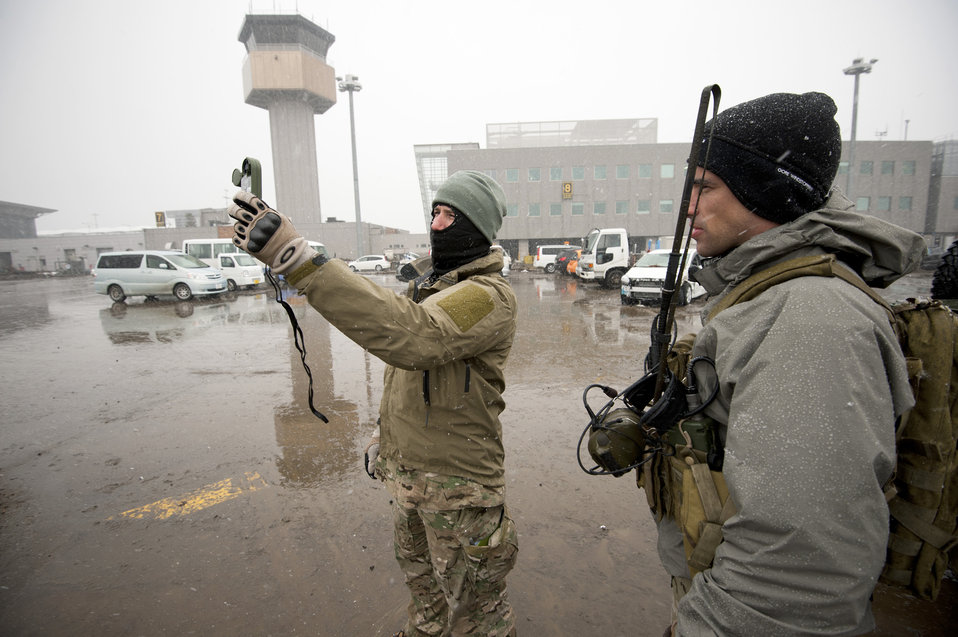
Headline

U.S. Air Force Staff Sgt. Chris Allen from the 320th Special Tactics Squadron special operations weather team checks the wind speed and temperature at Sendai Airport, Japan, March 16, 2011. The sudden snow and low visibility threatened to prevent aircraft from landing at the airfield.